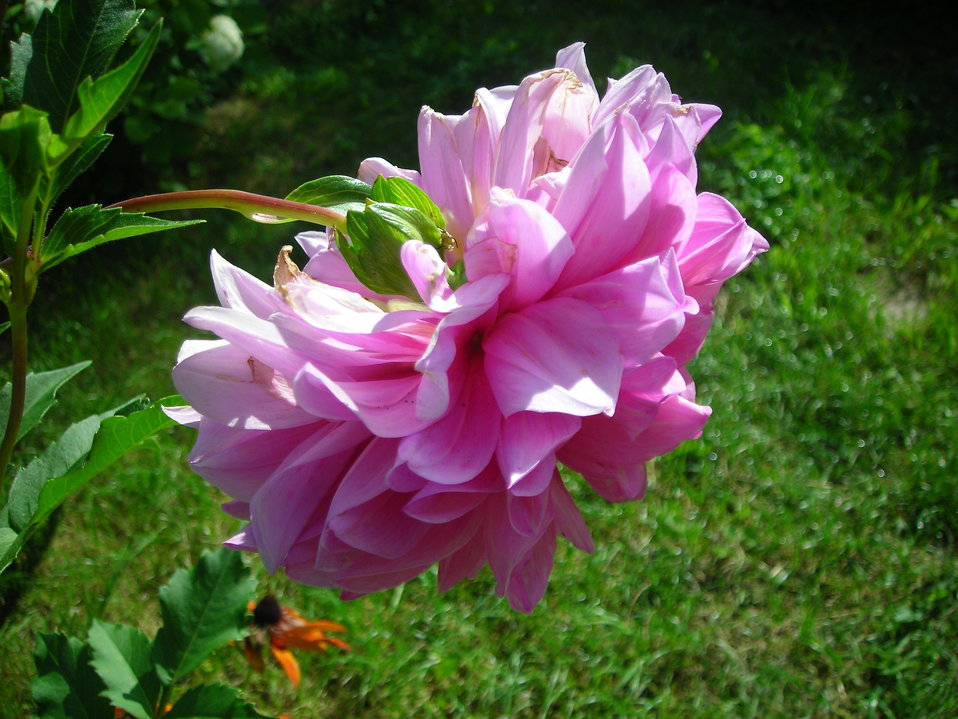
Русский: Розовая (фиолетовая) георгина Dahlia pink